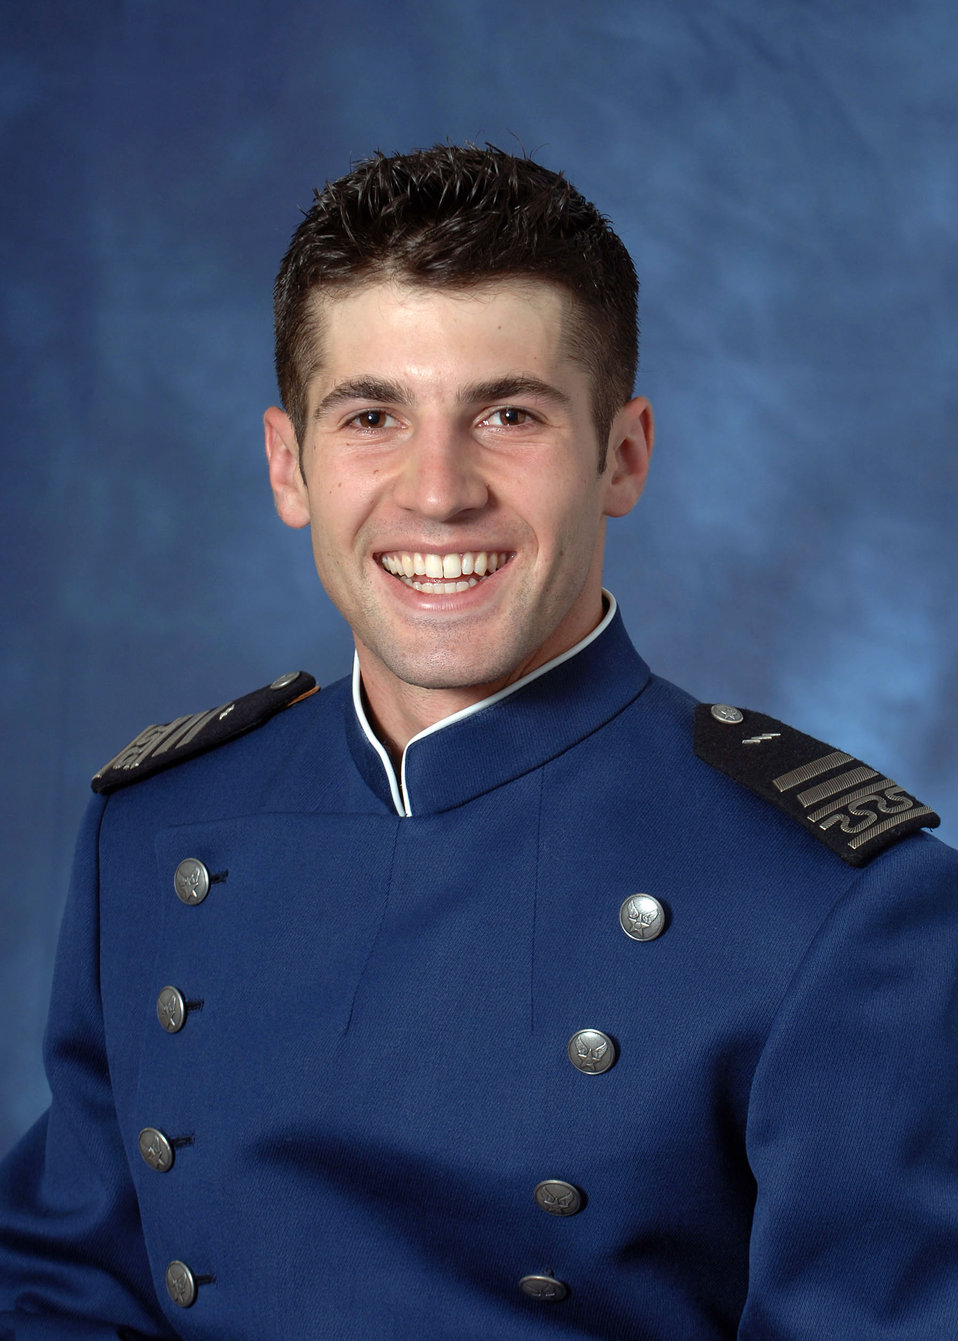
Hockey: Two Falcons earn awards

A.F. Academy senior Andrew Ramsey was second on the team and third in the AHA in goals and points in all games. He was fourth in the league in goals in AHA games and sixth in oints in conference games. He received honors as AHA Offensive Player of the week twice this season. .